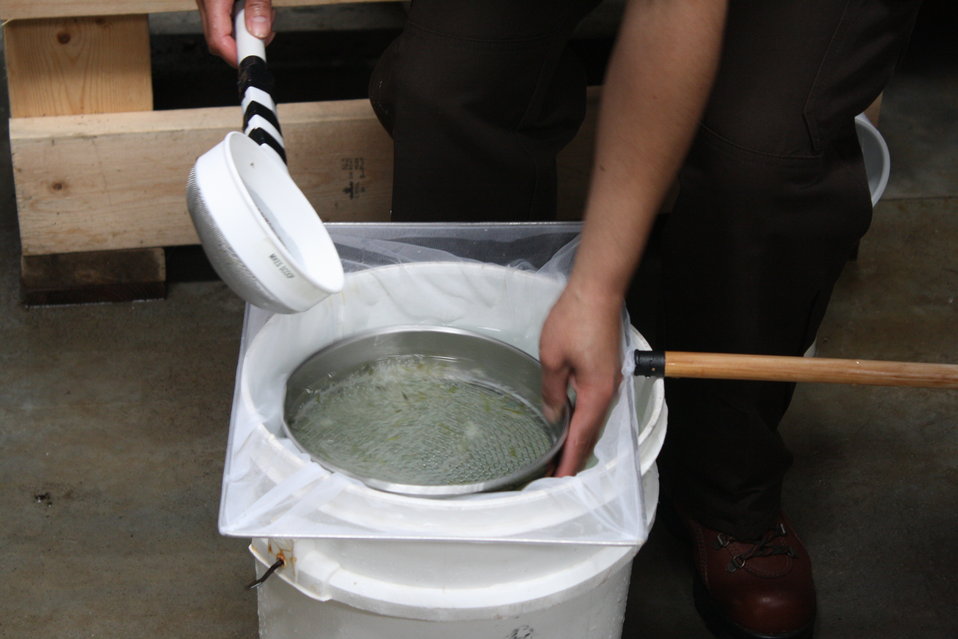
Nashua National Fish Hatchery welcomes regional office employees

Placing sifted shad eggs in clean water to remove debris.